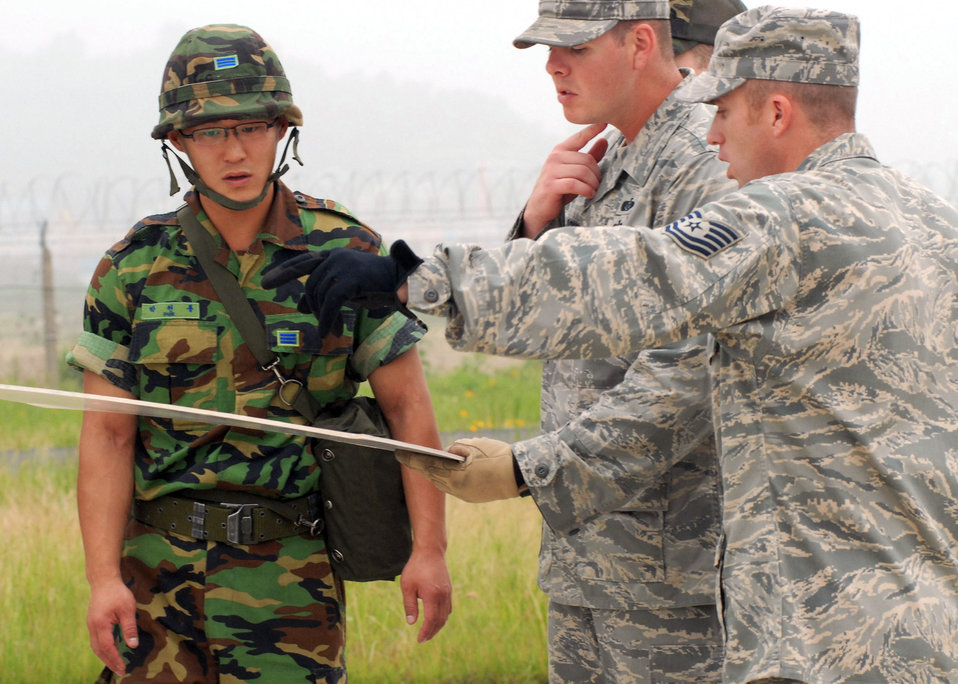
South Korean army UAVs enhance training at Kunsan

South Korean army Corporal Chunyong Park, Staff Sgt. Peter Rockey and Tech. Sgt. Frank Roman review the layout for the decontamination stations June 24 at Kunsan Air Base, South Korea. Sergeant Rockey is the NCO in charge of logistics, and Sergeant Roman is the NCO in charge of readiness and training from the 8th Civil Engineer Squadron.